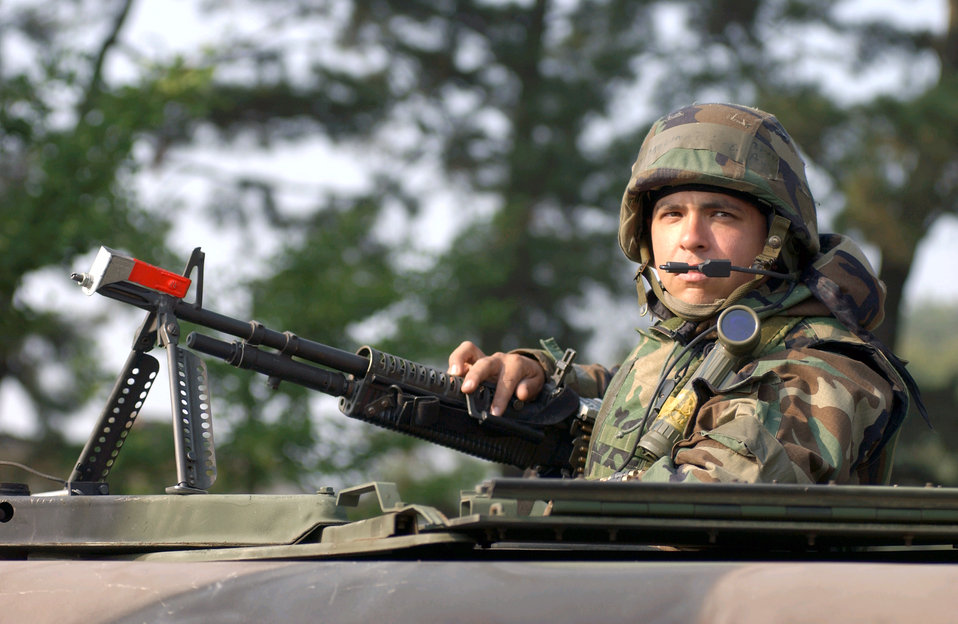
Standing guard

KUNSAN AIR BASE, South Korea -- Airman 1st Class Pedro Medina mans an M-60 machine gun during an exercise here June 9. Airman Medina is assigned to the 8th Security Forces Squadron.